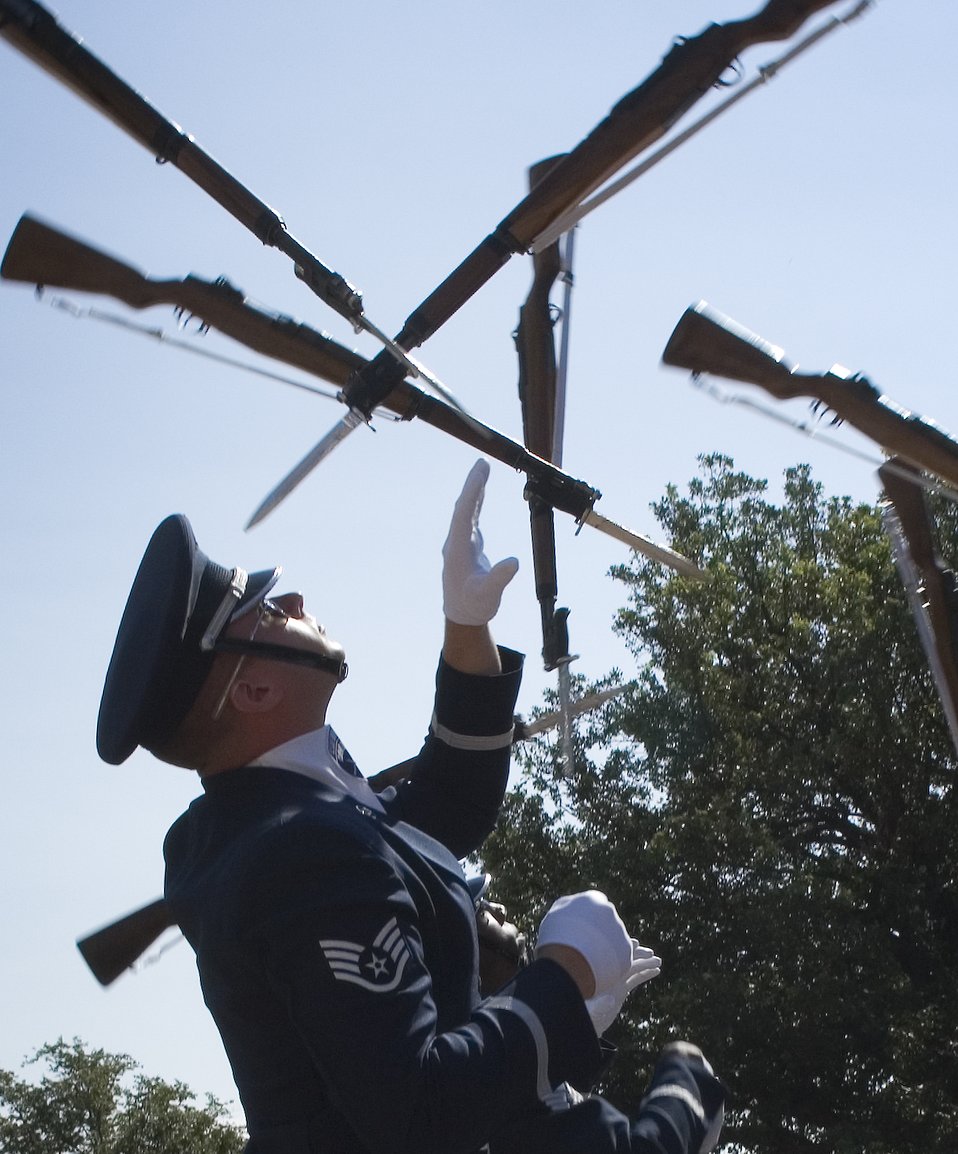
Air Force Week in the Heartland reaches out to Omaha zoo

Air Force Honor Guard drill team members perform Aug. 12 for visitors of the Henry Doorly Zoo in Omaha, Neb. Zoo visitors also had the chance to see the Do Something Amazing display featuring an F-16 Fighting Falcon, a motion simulator and video simulators during Air Force Week in the Heartland.